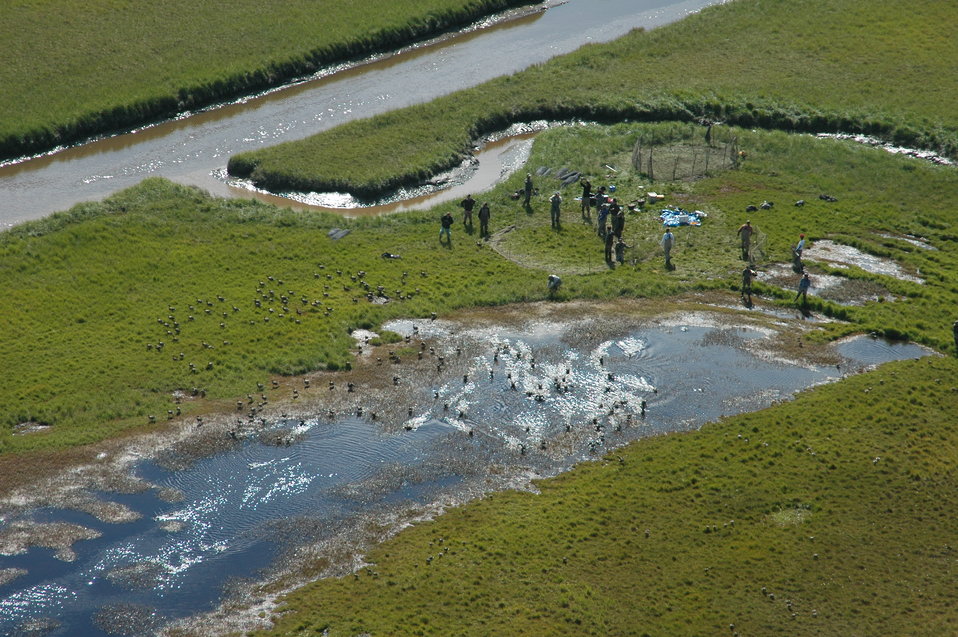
Releasing birds

A group of biologists, volunteers, biotechs, refuge staff, migratory bird management staff, etc joined forces to band and collar cackling cackling geese on the Yukon-Kuskokwim Delta.

Geese are put into holding pens until all of the captured birds have been processed. Then they are released as one big group.

USFWS Yukon Delta NWR